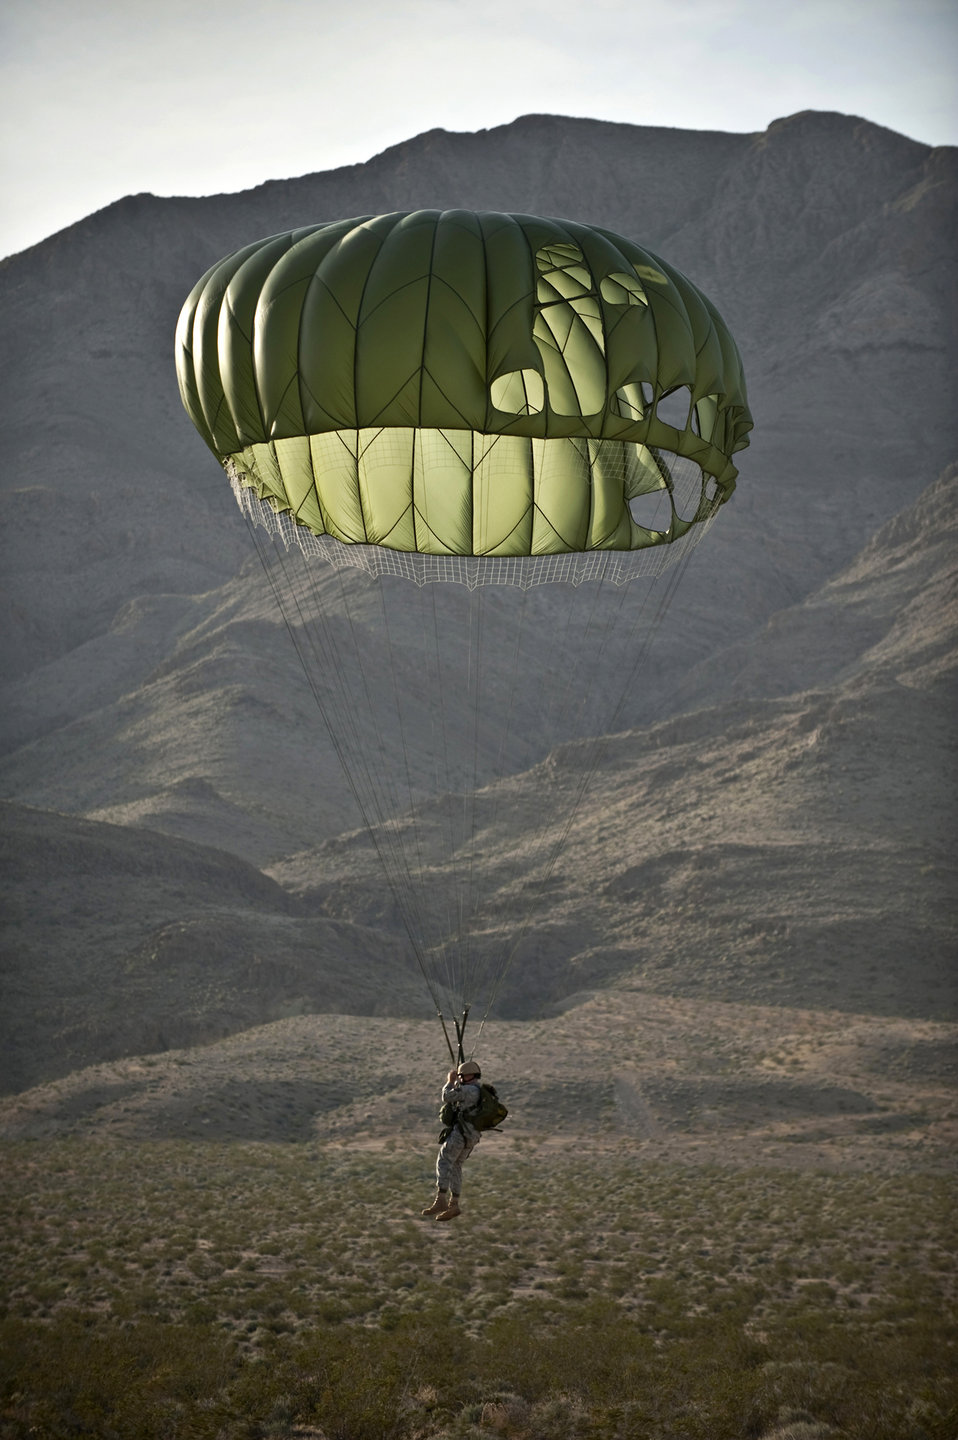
Airmen and Soldiers conduct airdrop and sling-load training

Tech. Sgt. Phillip McAlpin prepares to land after a static-line jump from a CH-47 Chinook helicopter April 15, 2011, as part of airdrop and sling-load training at Nellis Air Force Base, Nev. Tech Sgt. McAlpin is an airborne pavements and equipment operator assigned to the 820th RED HORSE Squadron.